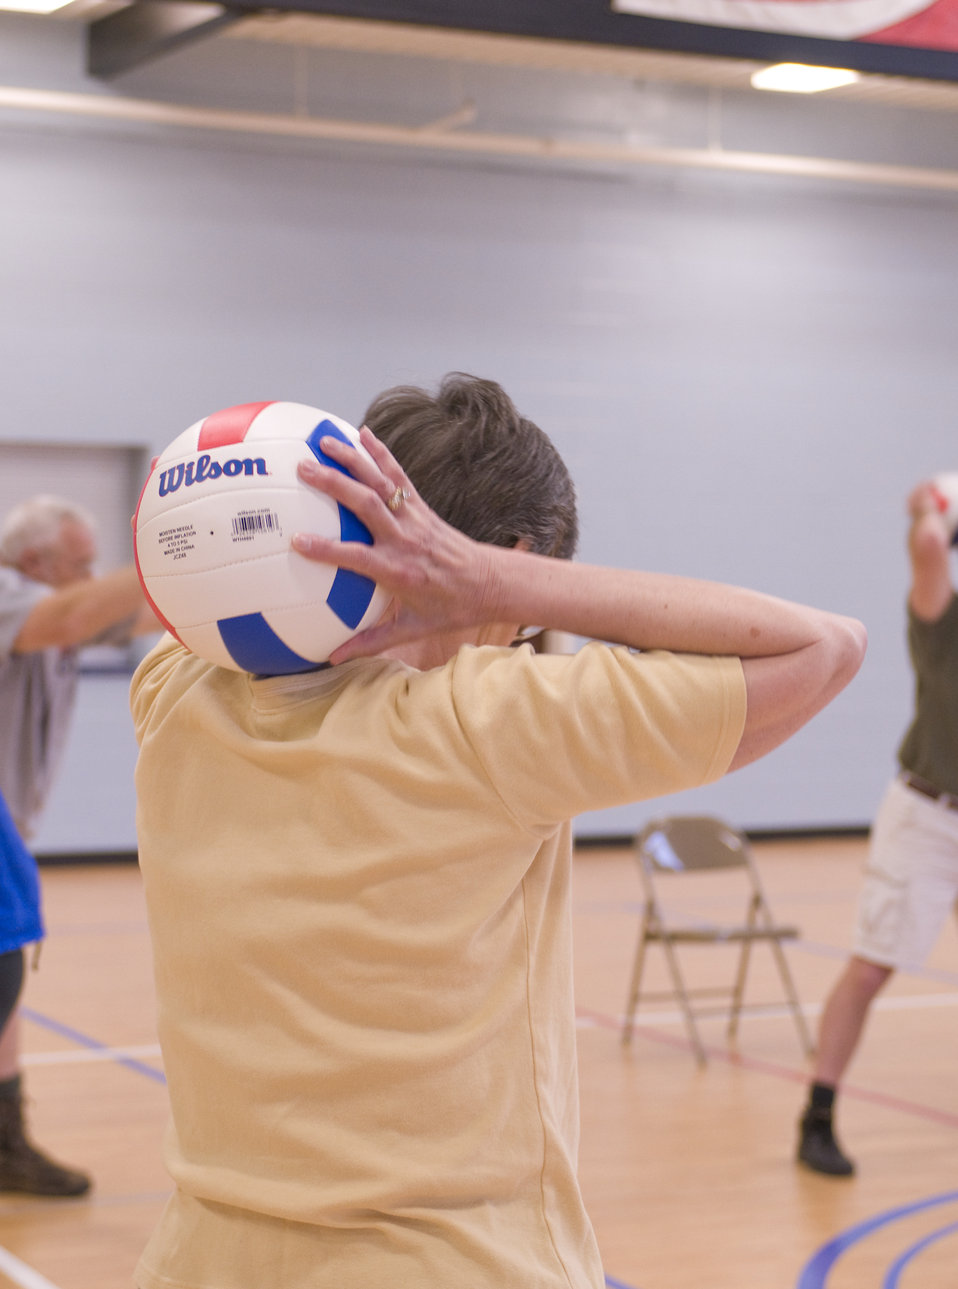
The older individuals pictured here on the wooden floor of an indoor basketball court, were participating in an exercise class consisting of stretching, and aerobic repetitive motion movements. At this point in their exercise session, the participants were working the muscles of their arms and shoulders, by holding an inflatable volleyball with both hands, and lifting the ball over, and behind their head, resting it on their neck. This exercise also helped to stretch the muscles as well.